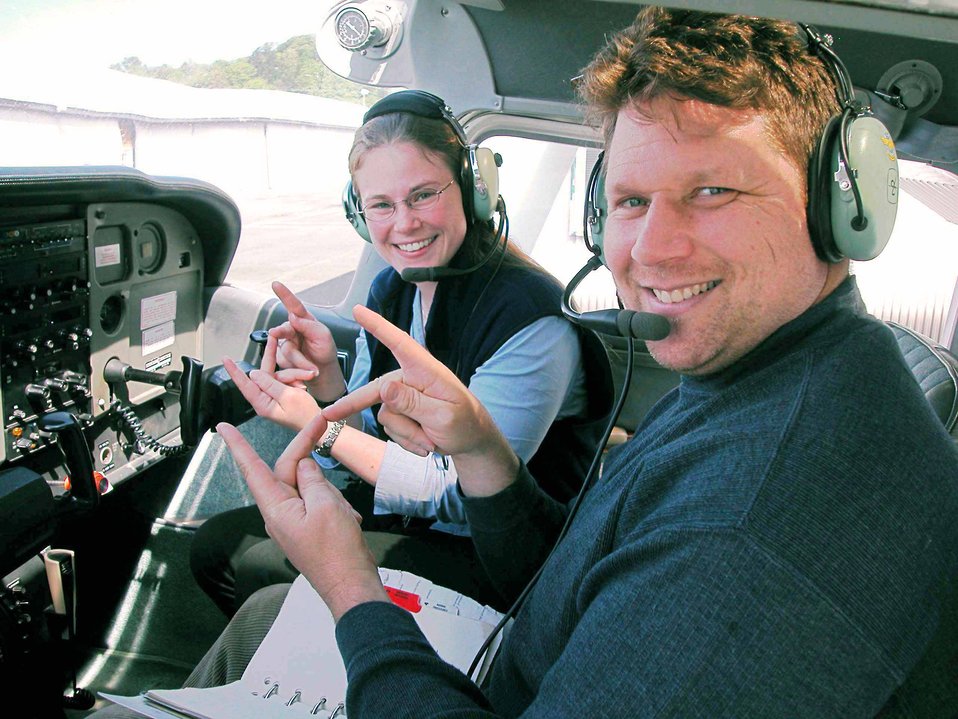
Airman teaches deaf man to fly

SEATTLE -- Rob Drake and his pilot instructor, Senior Airman Christy Helgeson, sign the word for